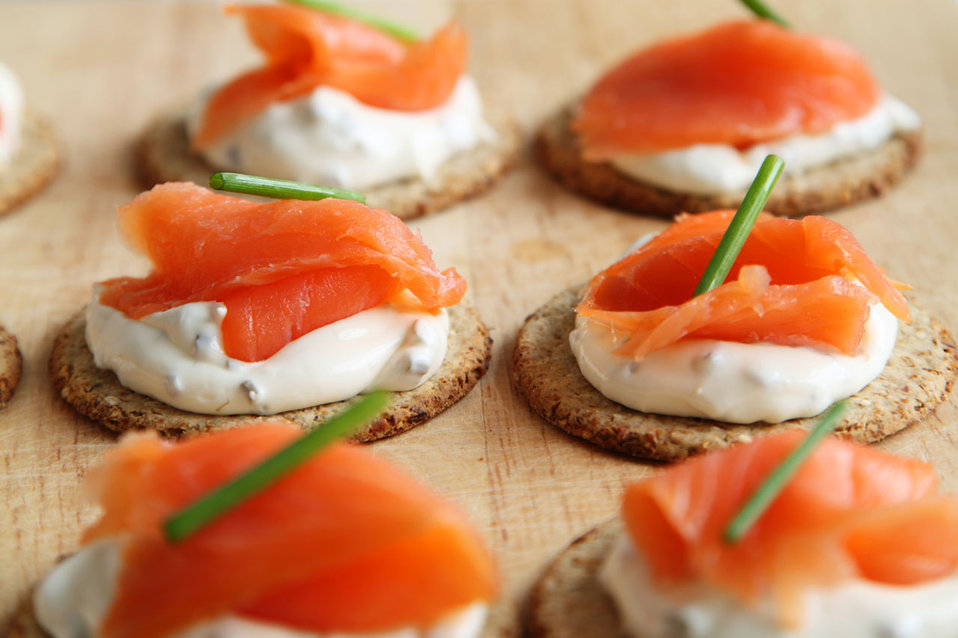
Salmon appetizer

Smoked salmon with chive and cheese on a cracker.